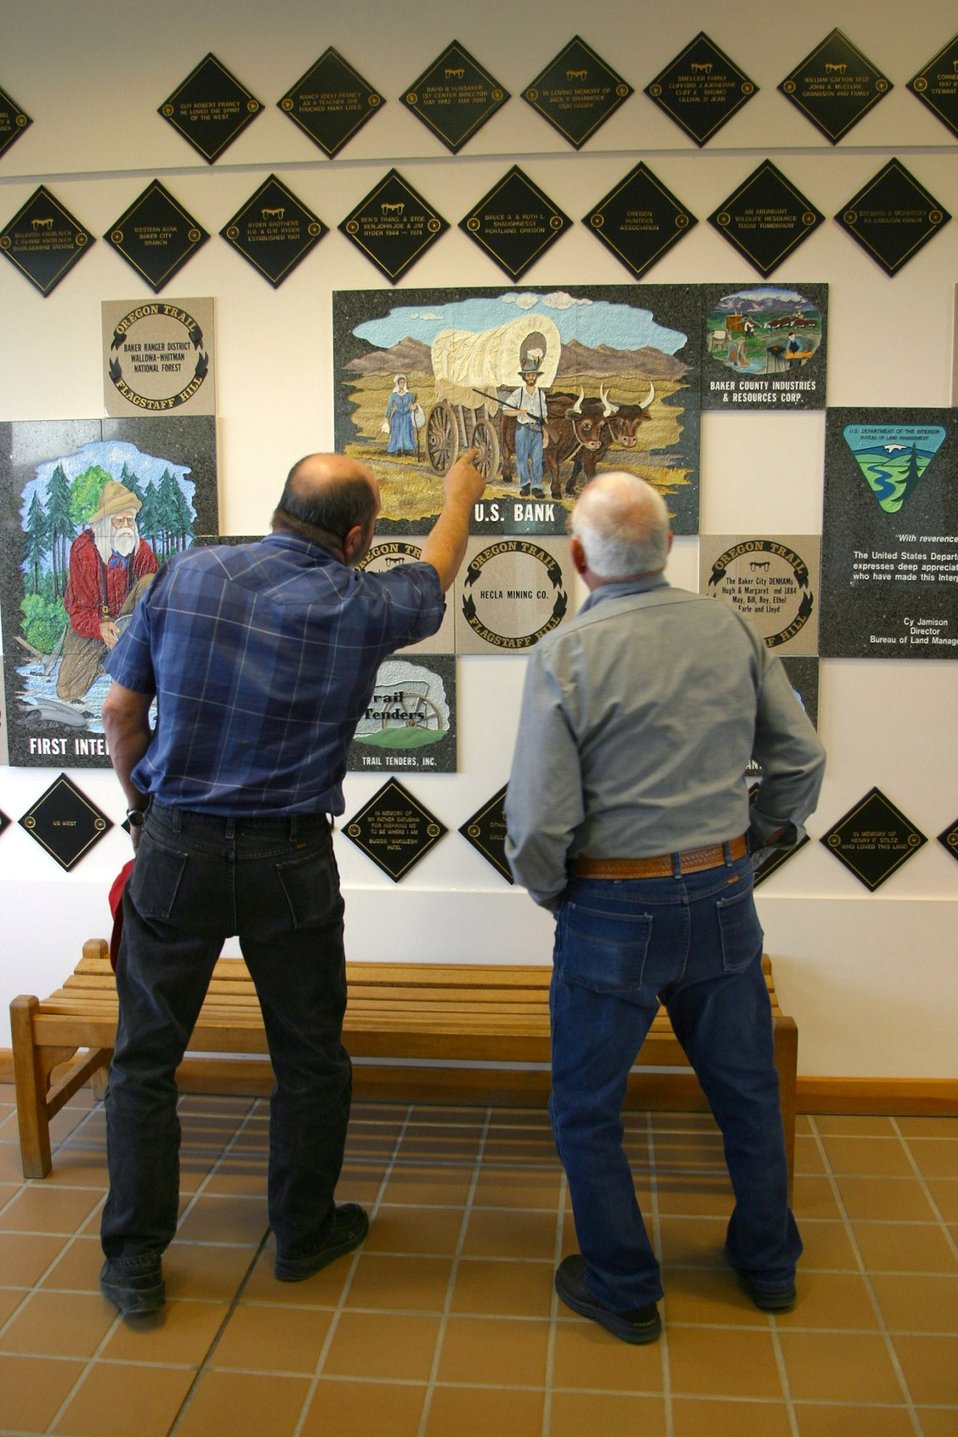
Visitors can relax and view contributor's tiles in the National Historic Oregon Trail Interpretive Center.